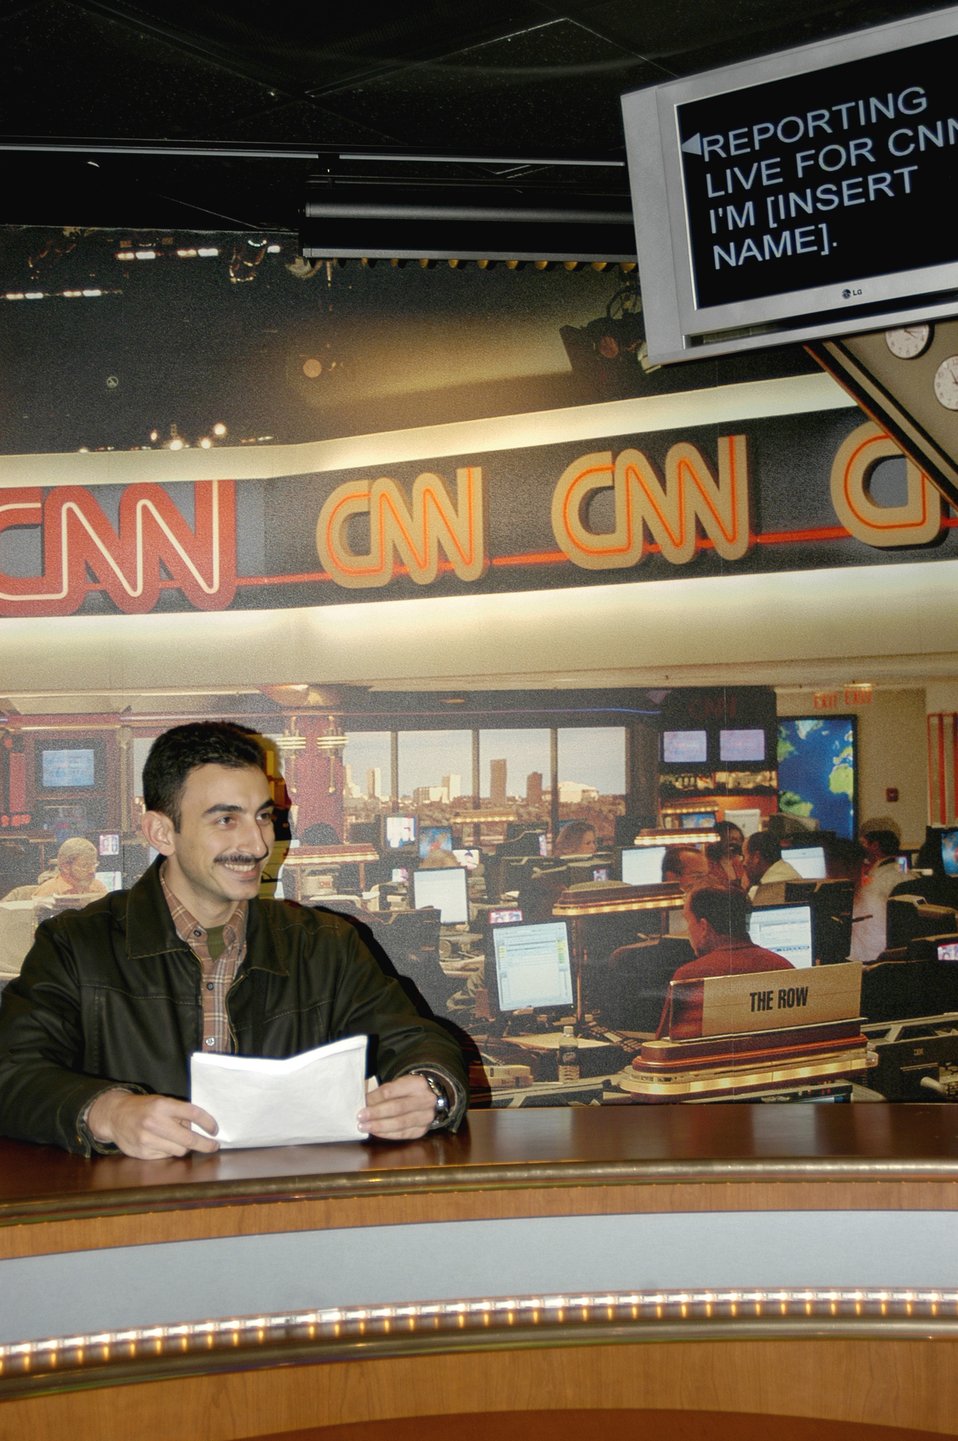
International students tour Atlanta

ATLANTA (AFPN) -- Second Lt. Nuno Goulart of Portugal gets acquainted with a mock news anchor desk at CNN Headquarters Feb. 18. Lieutenant Goulart is in pilot training at Columbus Air Force Base, Miss.